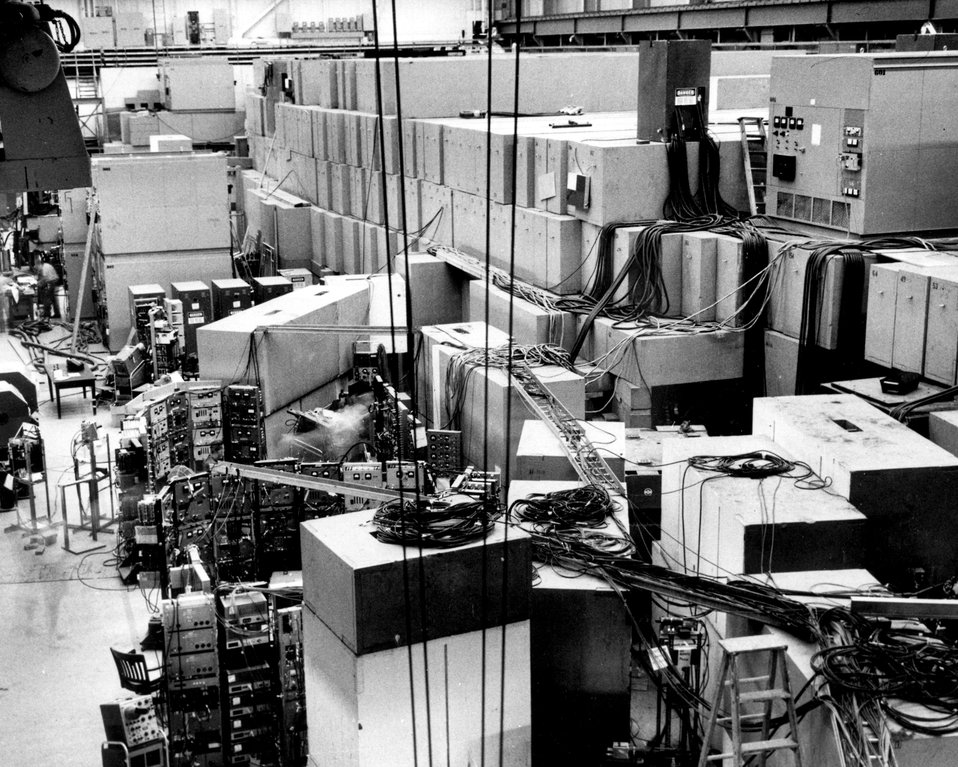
A view of the original experimental area at the Alternating Gradient Synchrotron showing the total cross section measurements experiment. One of the gaseous Cerenkov counters, surrounded by shielding, is partially visible in the lower right-hand corner. c. 1962